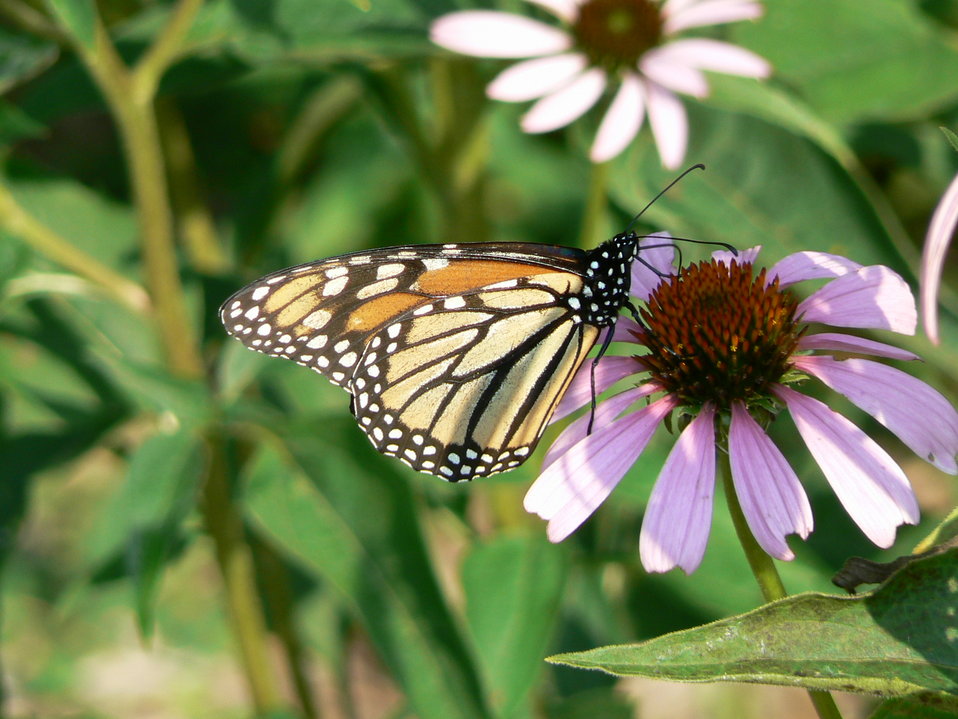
Monarch at Cape May National Wildlife Refuge.